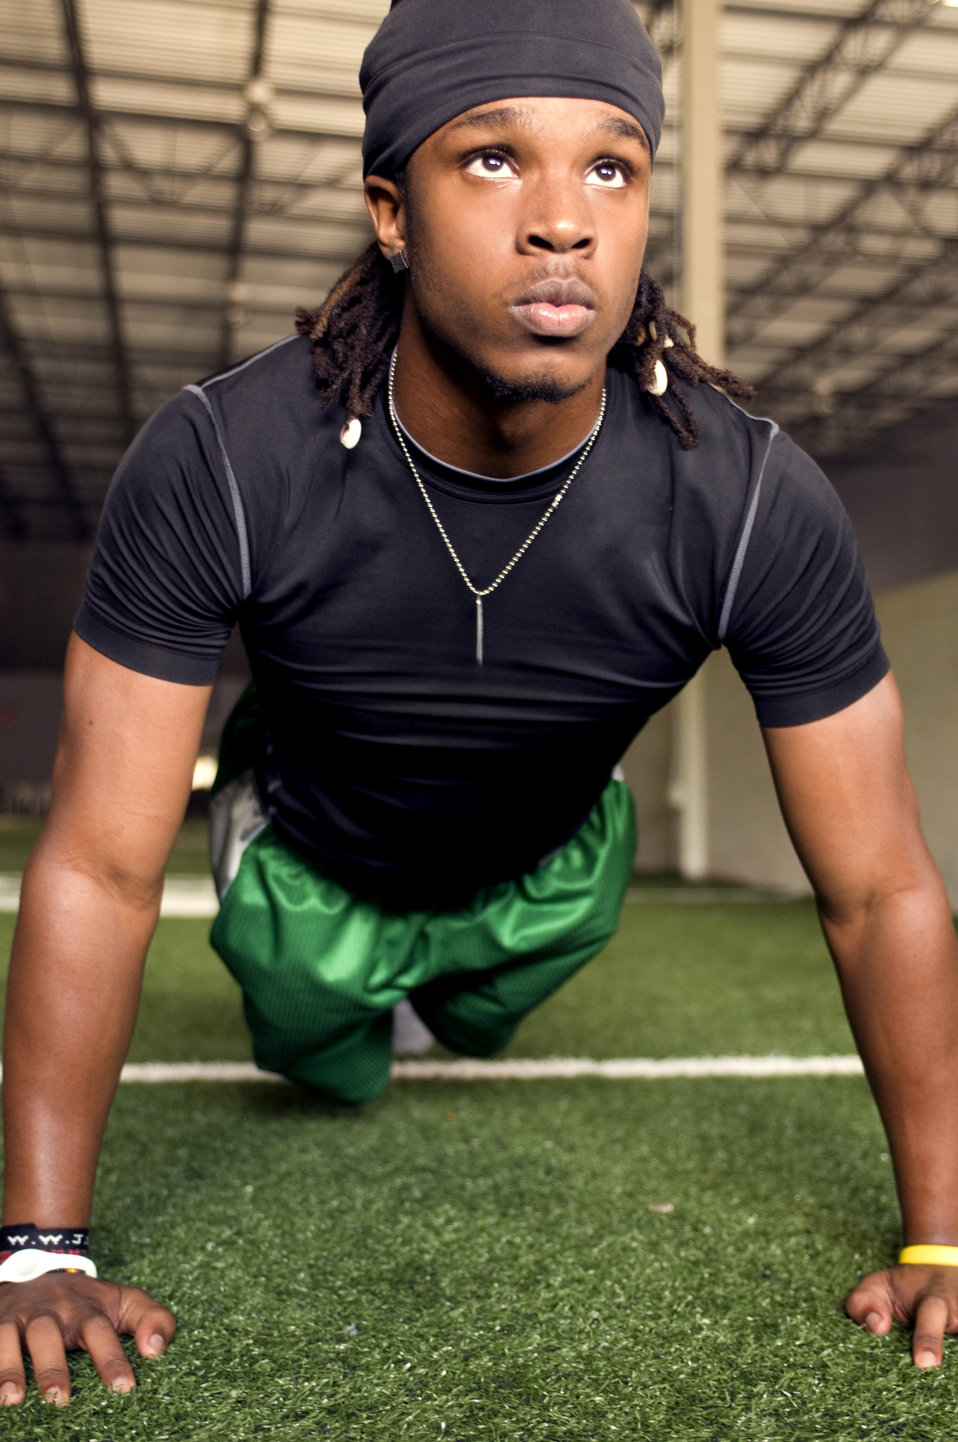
This young man was performing push-ups on an indoor practice field's artificial grass surface. At this point of his activity, he was at the high-point of his push-up exercise, whereupon, his arms were both extended at the elbows, his palms were flush with the ground, and chest was in a straight line with the lower half of his body. Hopefully, he was keeping well hydrated during his exercise regimen by drinking fresh water during his workout.